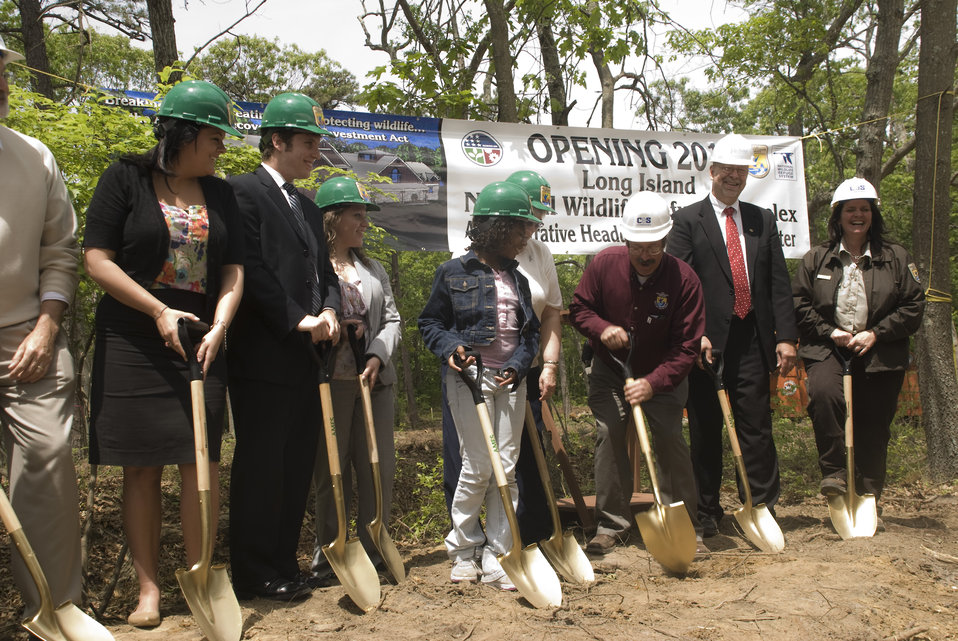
Groundbreaking